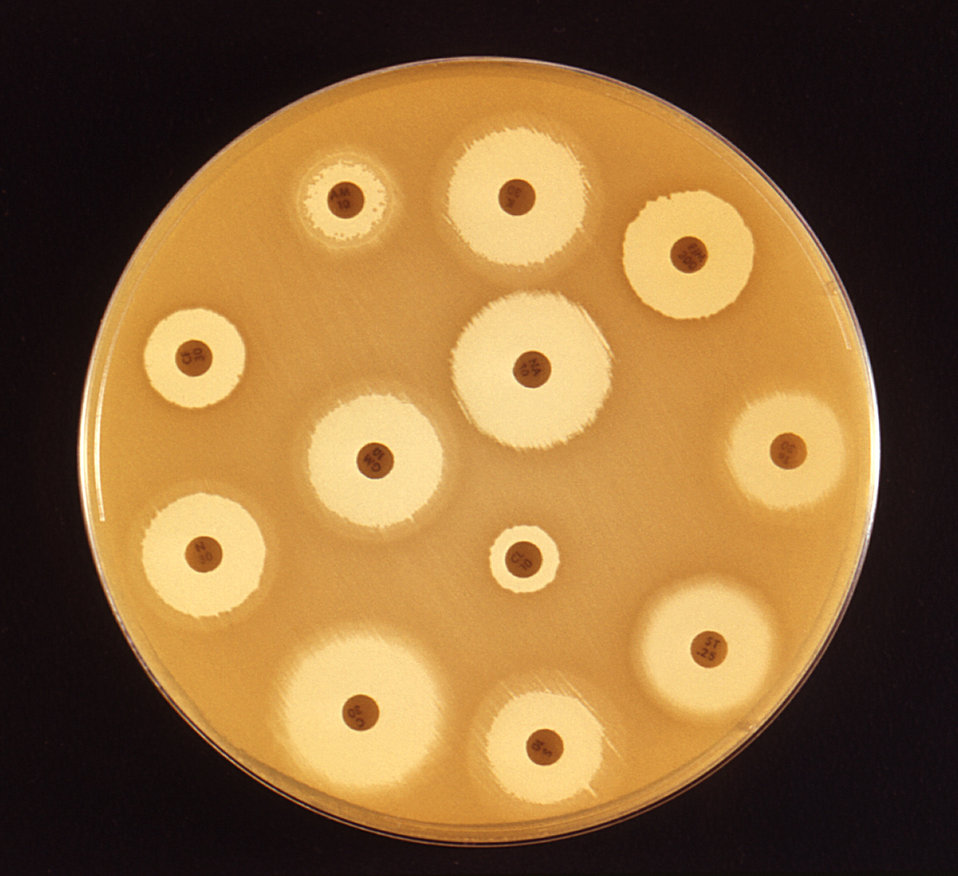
This 1972 image depicted a Mueller-Hinton agar culture plate that had been used in an antibiotic susceptibility test (AST). Known as the Kirby-Bauer method, each of the small labeled discs, or wafers, contained an antibiotic cocktail. The light halos surrounding each disc, also known as 'reaction zones', represented regions in which the bacteria on the agar's surface did not thrive, due to their sensitivity to the antibiotic that had been soaked into these respective discs. See PHIL 10787 and 10789 for enlargements of regions of this photograph.